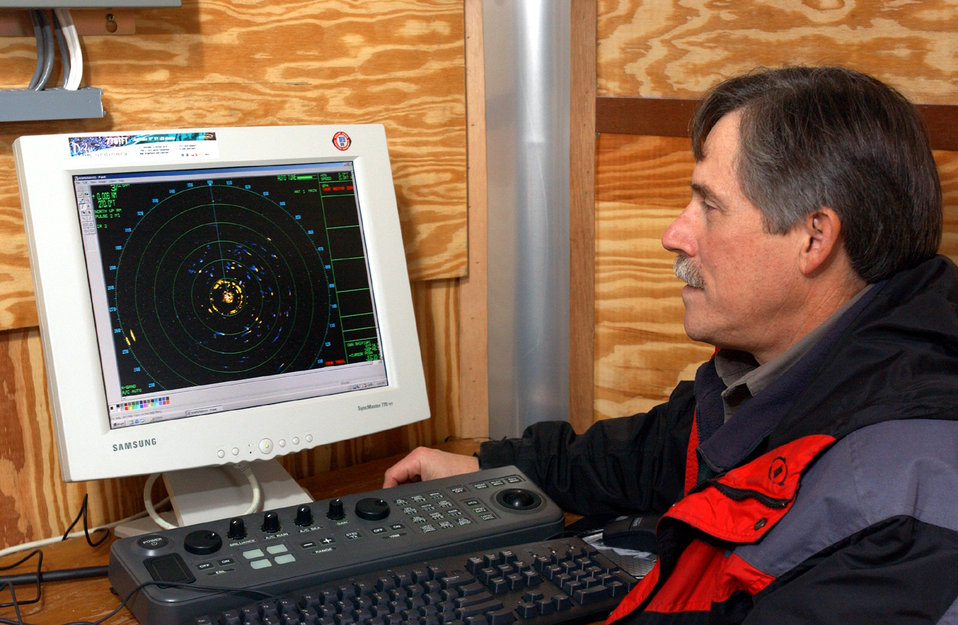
Bird radar tracks patterns

ELMENDORF AIR FORCE BASE, Alaska -- Herman Griese monitors the bird radar here Nov. 5. The mobile bird-radar system is contained in a small trailer and is connected to a revolving satellite dish by a 100-foot umbilical cord. The system allows wildlife experts to observe and document patterns of bird activity. Griese is a wildlife biologist with the 3rd Civil Engineer Squadron.